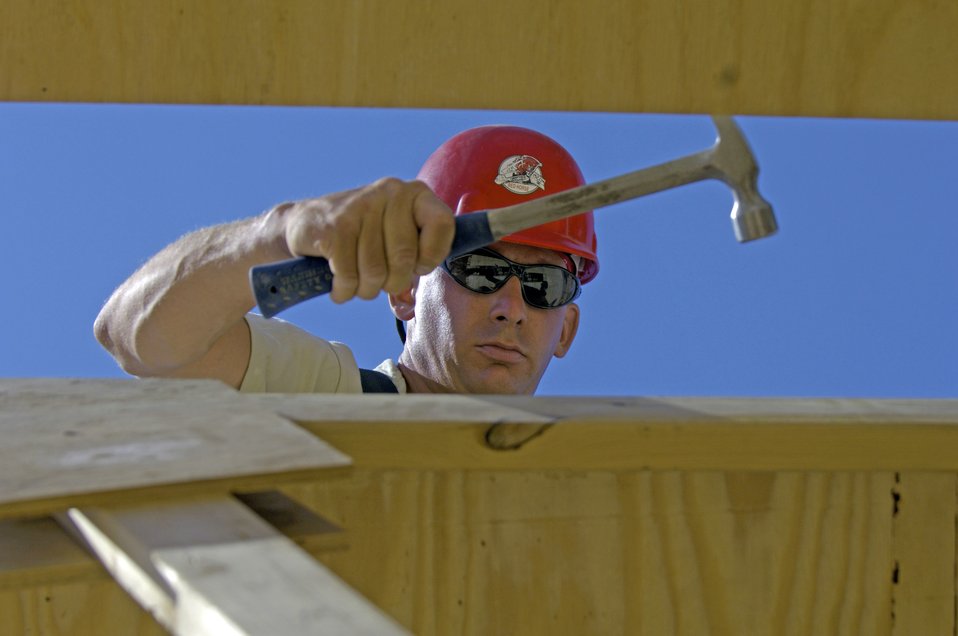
RED HORSE Airmen support Army in southern Baghdad

Tech. Sgt. Chris Belknap adjusts the spacing between roof trusses June 22 at at Forward Operating Base Kalsu, Iraq. Sergeant Belknap is the site foreman with the 557th Expeditionary RED HORSE Squadron, one of the Rapid Engineer Deployable Heavy Operational Repair Squadron Engineers, or RED HORSE, Airmen who are forward deployed from Balad Air Base, Iraq and tasked to build four tactical operations centers for the Army's 2nd Brigade combat team, 3rd Infantry Division headquartered here. The 2/3 ID is currently running operations out of tents. The RED HORSE unit, made up of Air Guard, Reserve and active-duty Airmen, was requested by the Army to come into this